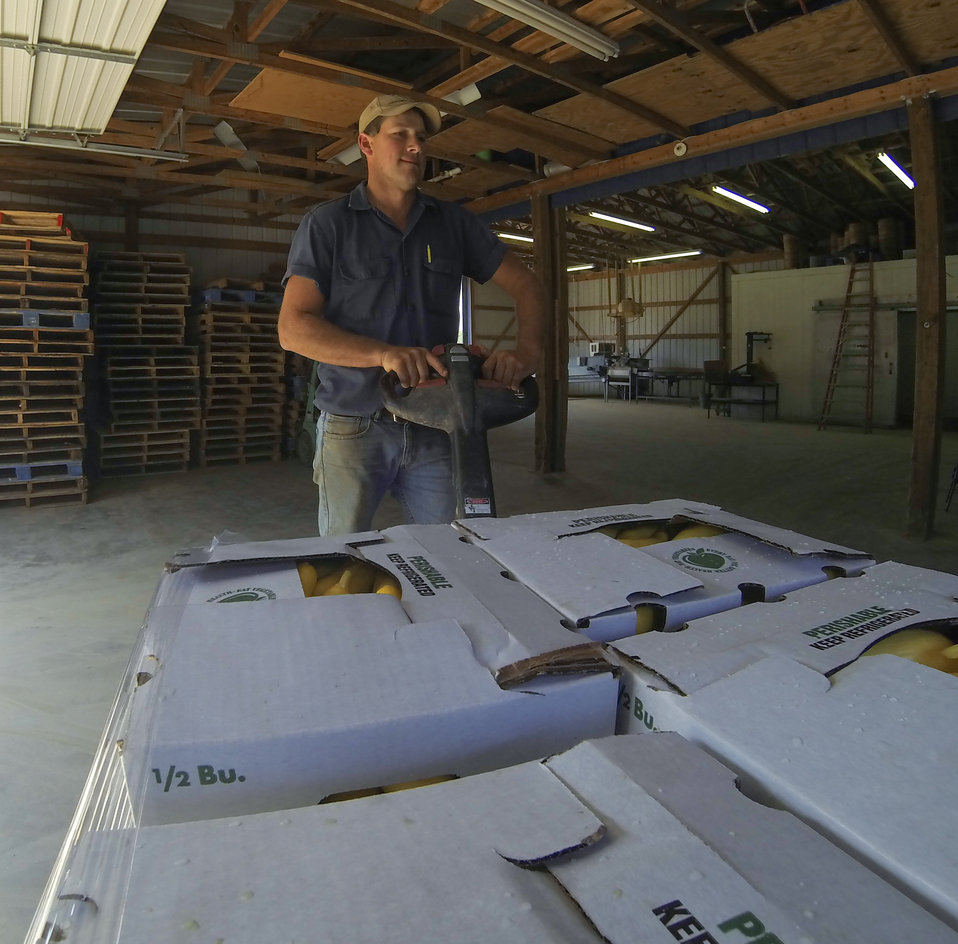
Kevin Kirby maneuvers a pallet of fresh picked squash onto a waiting tractor-trailer rig for shipment to a wholesaler, during the harvest process at Kirby Farms in Mechanicsville, VA on Friday, Sept. 20, 2013. Kirby Farms devotes 200 acres of the farm to eggplant, spinach, beets, tomato, jalapeno peppers, melons and a variety of greens. Soybeans and small grain are grown on the remaining 300 acres. The fertile Virginia soil and their management practices, allows Kirby Farms to double and triple crop fields with rotational crop selection. Wholesalers, who buy from this farm, sell the produce to major supermarkets in the Mid-Atlantic region, from North Carolina to Maryland. Restaurants in the local area prepare and serve their harvest to patrons in the Greater Richmond, VA Region.